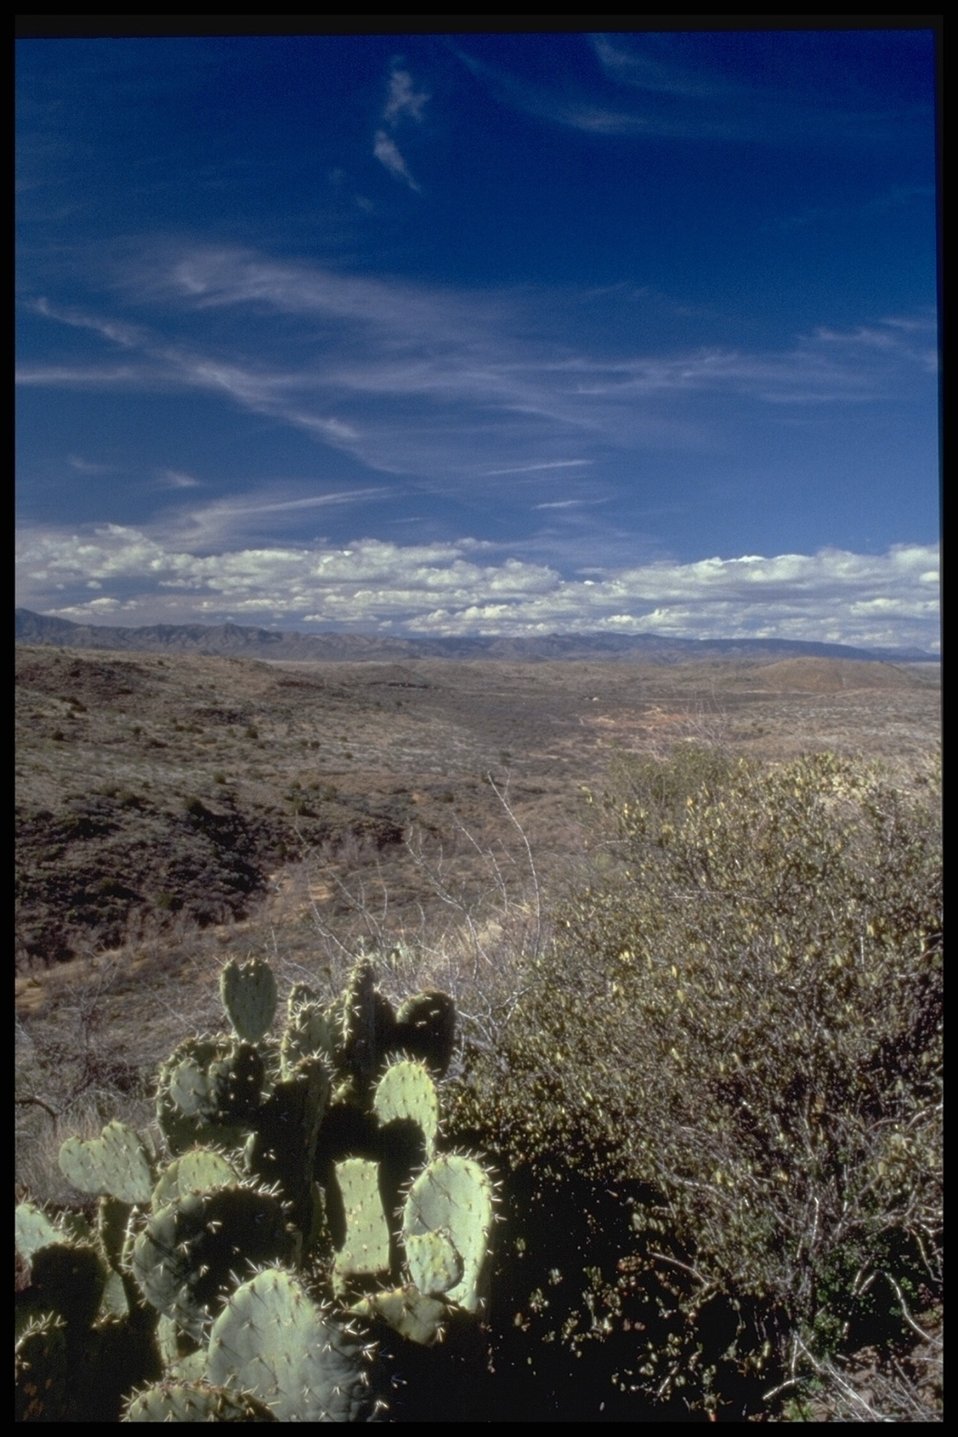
Mountains are seen in the distance in this great photograph of the Agua Fria National Monument.